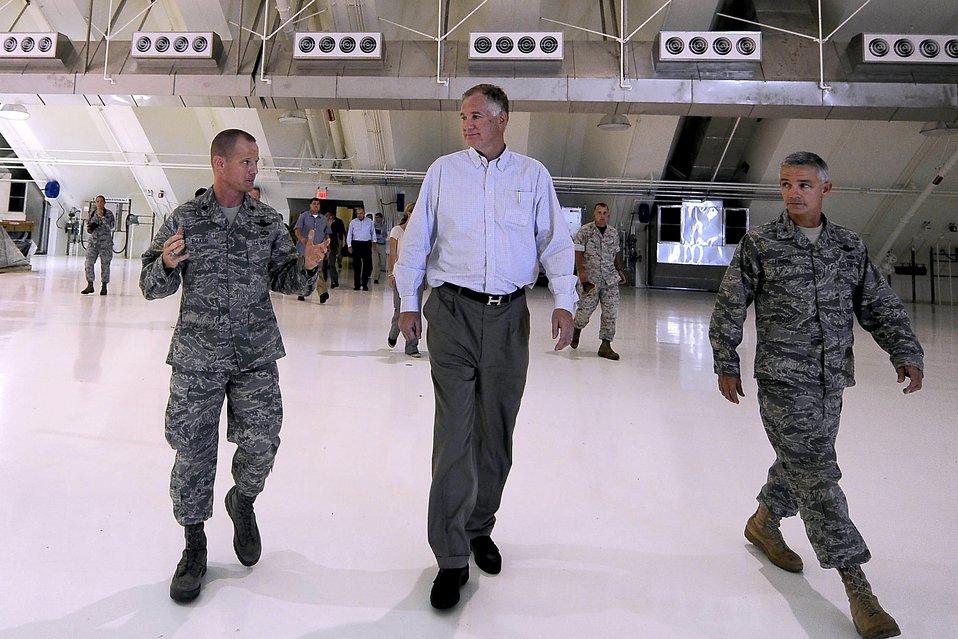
Deputy Secretary of Defense Lynn Visits Guam

Deputy Defense Secretary William J. Lynn III tours the new RQ-4 Global Hawk hangar on Andersen Air Force Base, Guam, July 28, 2010.